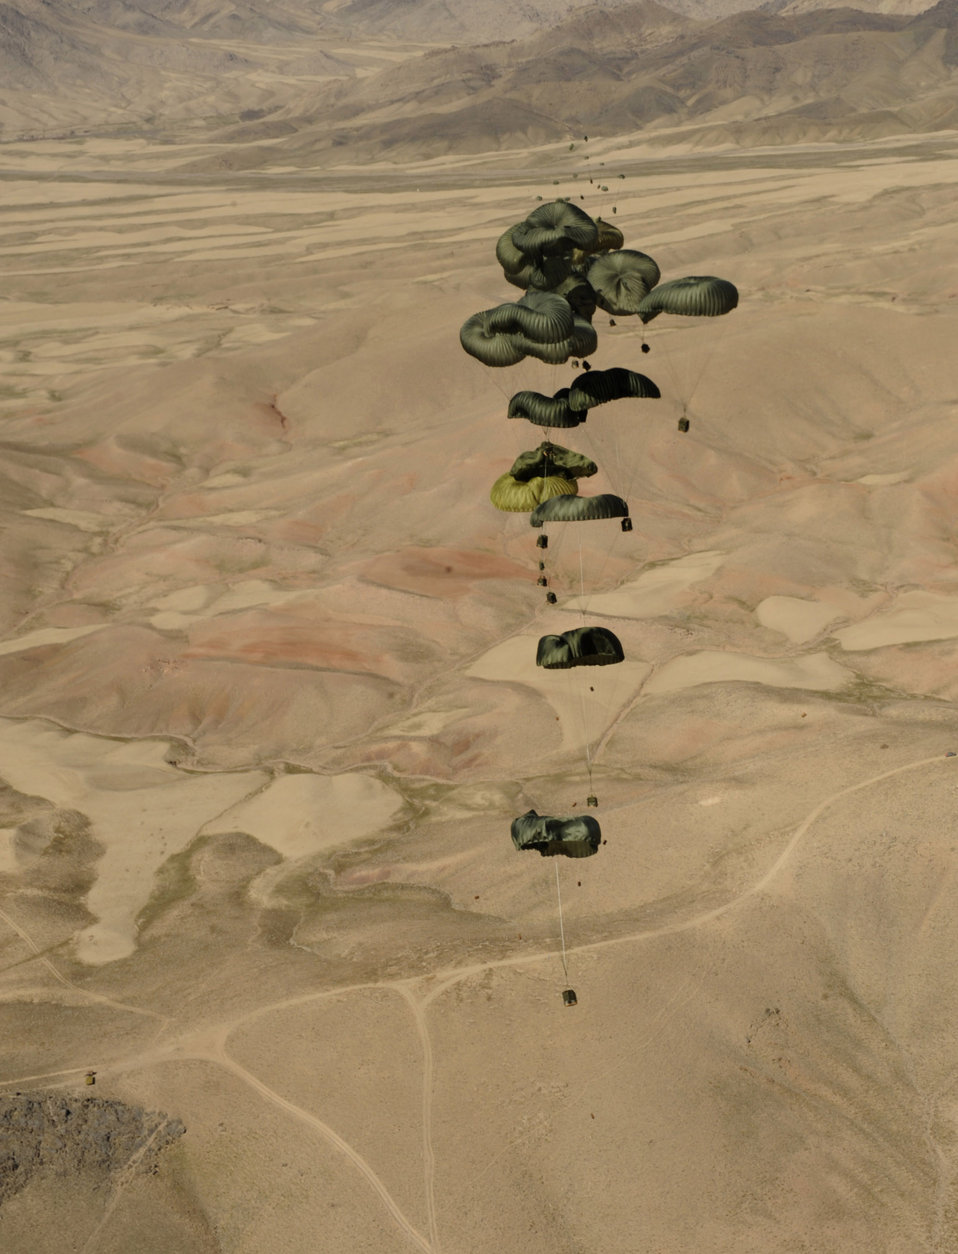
Airmen deliver 1 million pounds of supplies in 42 days

Container delivery system bundles fall to the drop zone after exiting an 816th Expeditionary Airlift Squadron C-17 Globemaster III during a high-altitude airdrop mission Feb. 14 in Afghanistan.